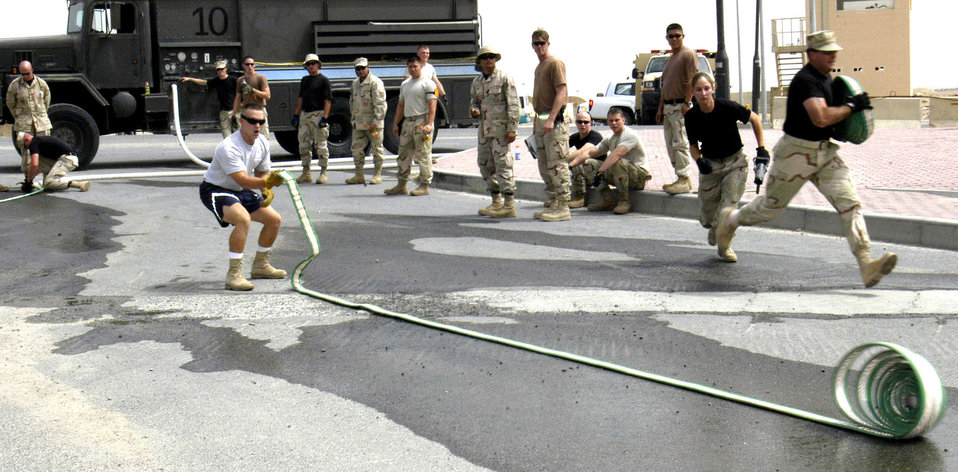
Firefighter Challenge

Staff Sgt. Shaun Lyle rolls out a hose during the Firefighter Challenge in Southwest Asia on Thursday, May 4, 2006. More than 36 Airmen, Marines and Soldiers participated in the event, which was hosted by the 386th Air Expeditionary Wing fire and emergency services flight. Individual and team events included climbing a 40-foot tower to hoist a 40-pound hose and pulling a hose 75 feet, which when extended weighs more than 270 pounds. Sergeant Lyle is with the 386th Expeditionary Civil Engineer Squadron.